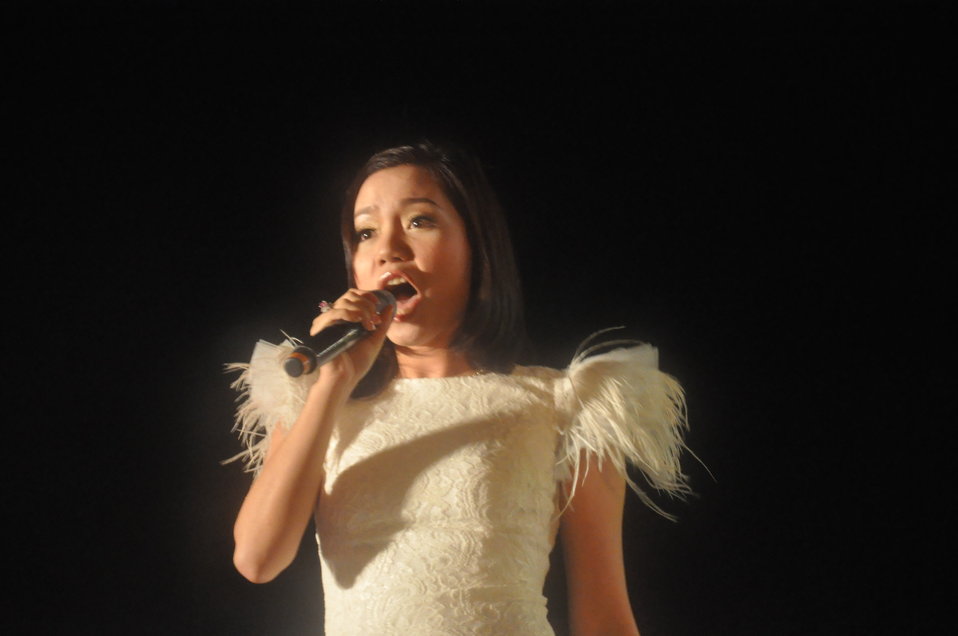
USAID and MTVEXIT Concert Halong Bay

Halong Bay Concert, April 4, 2010